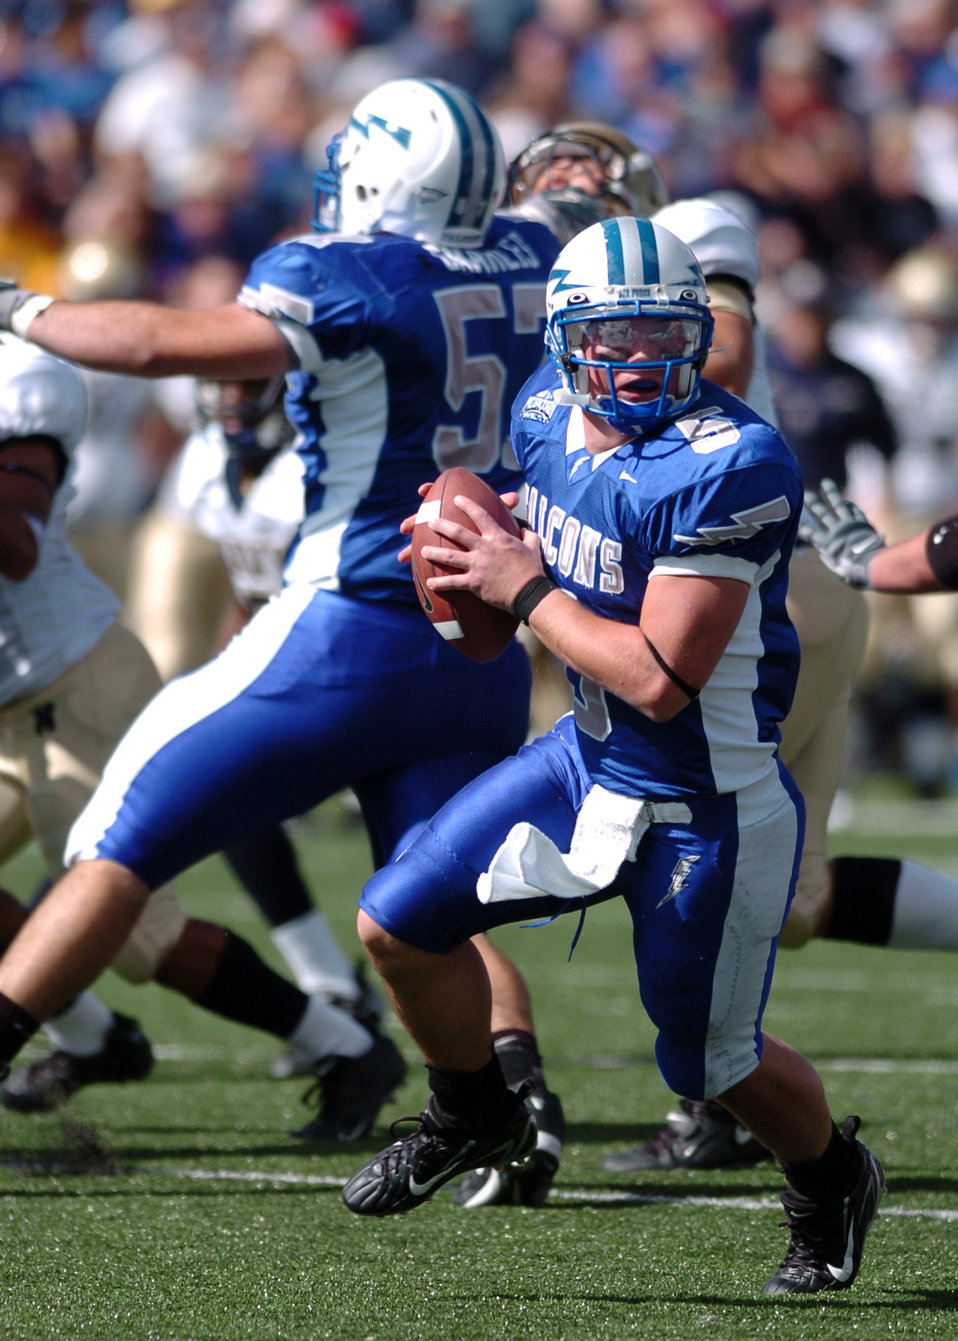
Quarterback roll out

Air Force quarterback Shaun Carney rolls out to look for targets downfield Saturday. His 119 yards passing were not enough to defeat Navy, who won 24-17.